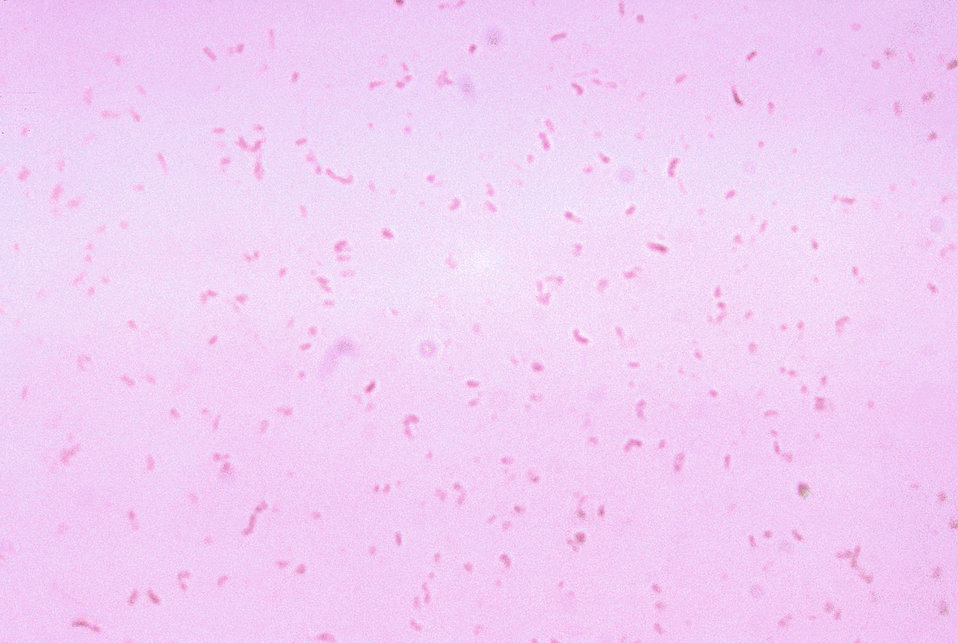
This micrograph depicts the gram-negative bacterium, Fusobacterium necrogenes cultured in blood agar for 48 hours.